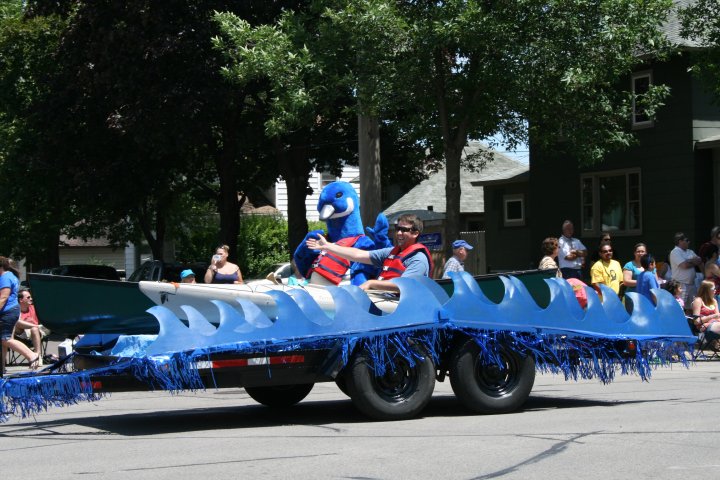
Val and Nate on the float

“Webster” the blue goose (STEP Val Johnson) and YCC crew Leader Nate Lynne wave to the crowd from the Summer of Paddling float during the Winona, MN Steamboat Days parade.